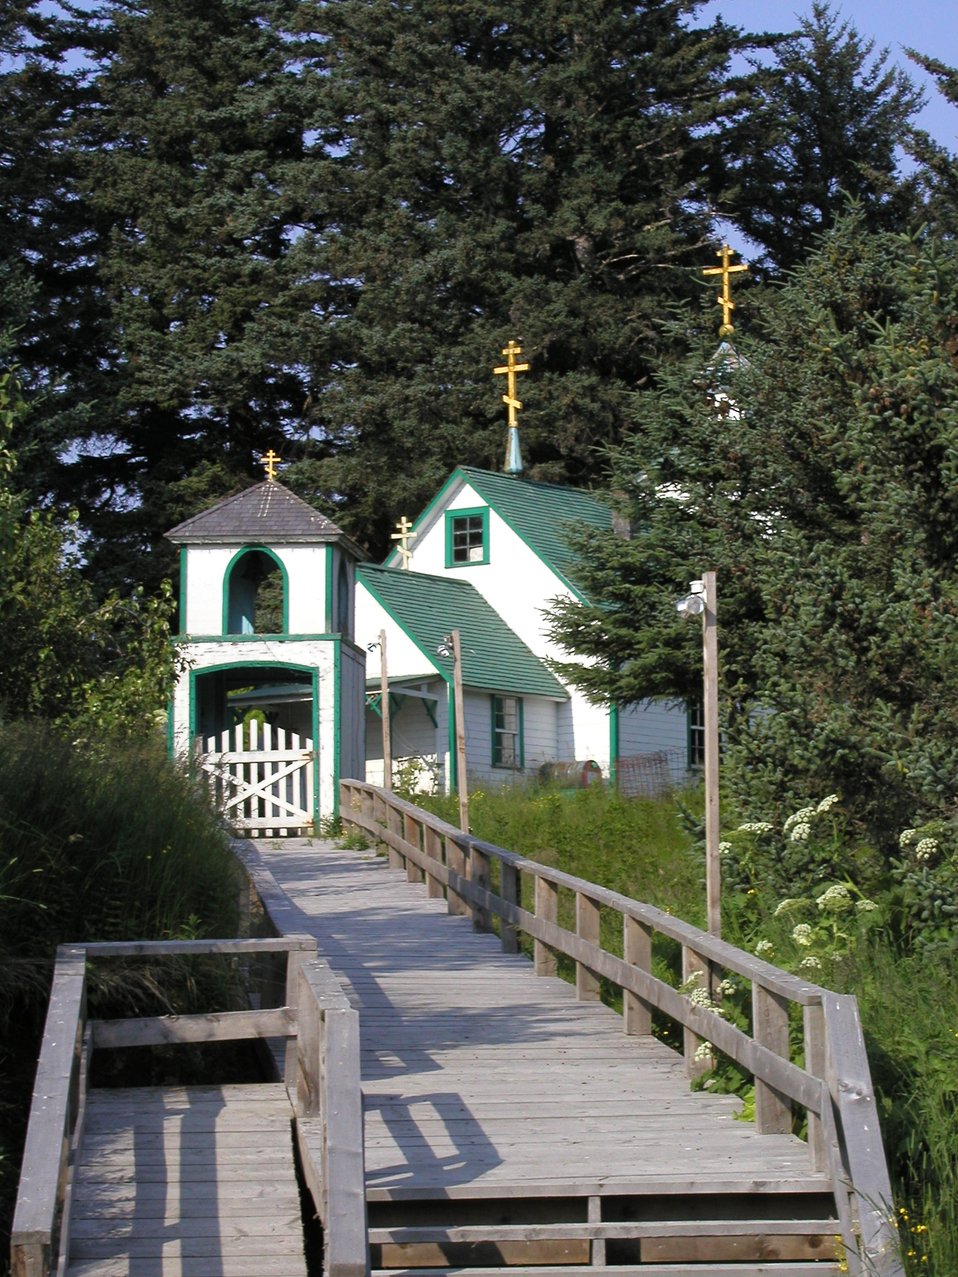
The Russian Orthodox Church on Spruce Island